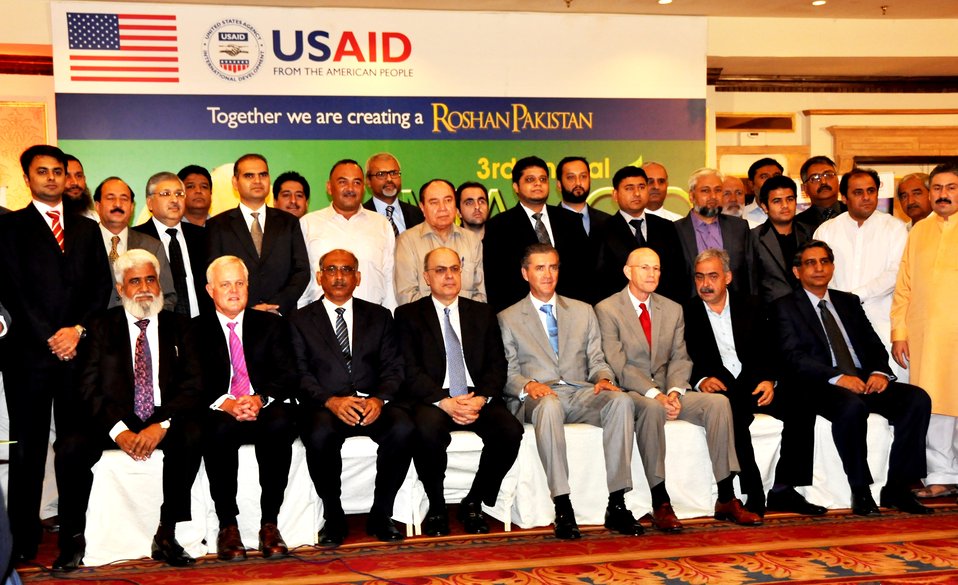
Mango Conference